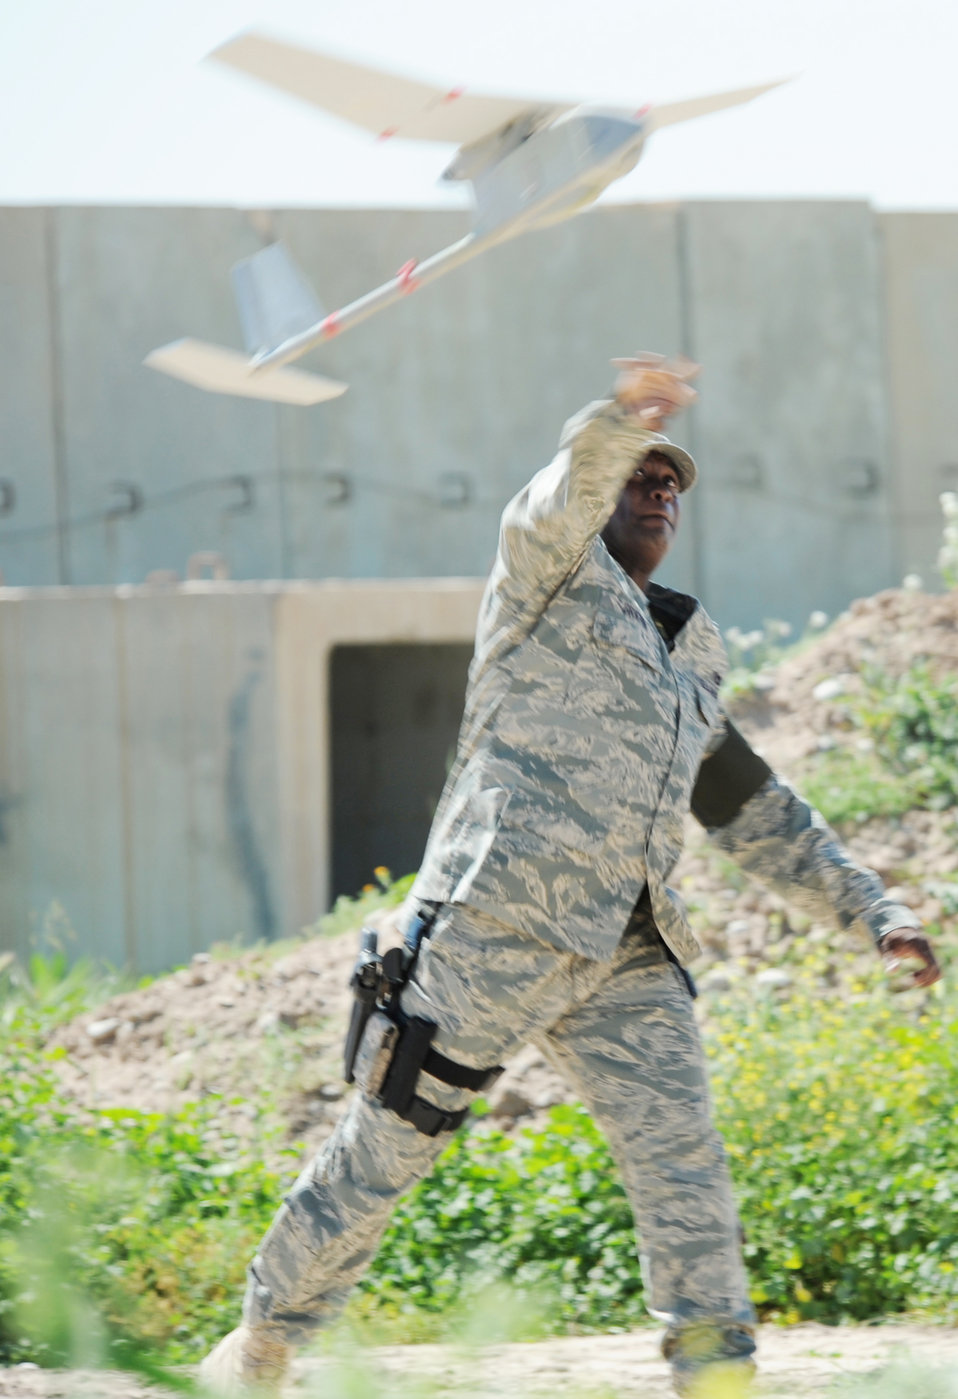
Airmen launch RQ-11B Raven

Master Sgt. Bryon Griffin launches a RQ-11B Raven unmanned aerial vehicle at Kirkuk Regional Air Base, Iraq, March 23, 2010. The Raven is equipped with cameras, sensors and communications tools to perform missions in reconnaissance, surveillance, positive target identification and battle damage assessment inside and outside the wire. Sergeant Griffin is the NCOIC with the 506th Expeditionary Security Forces Raven team and deployed from Patrick Air Force Base, Fla.